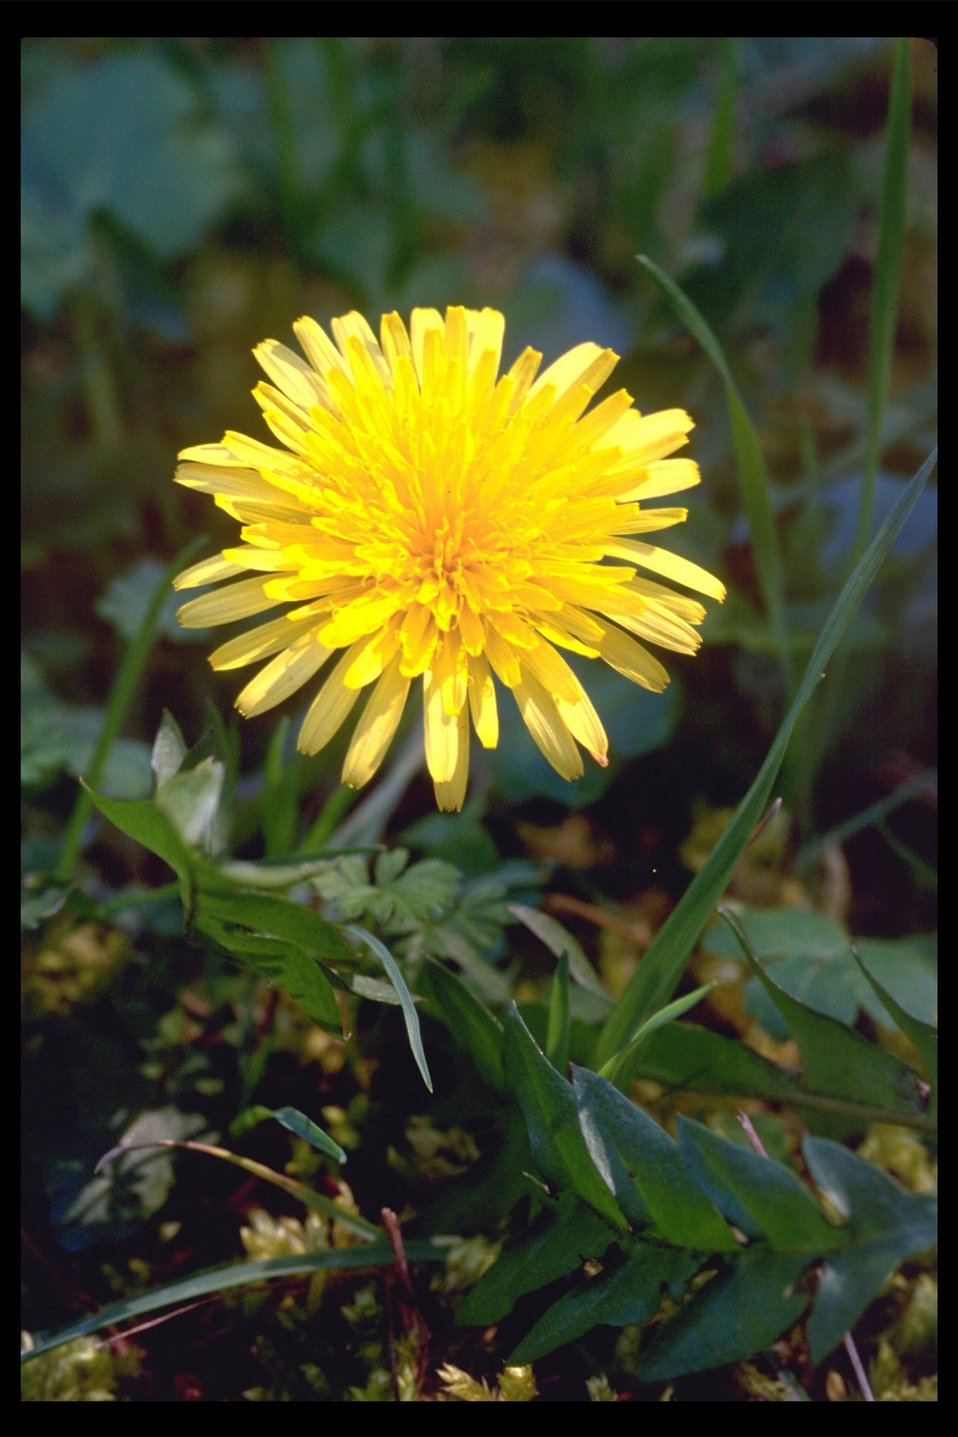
Dandelion (Taraxacum officinale) at Aunt Caroline's Park in Shady Cove.